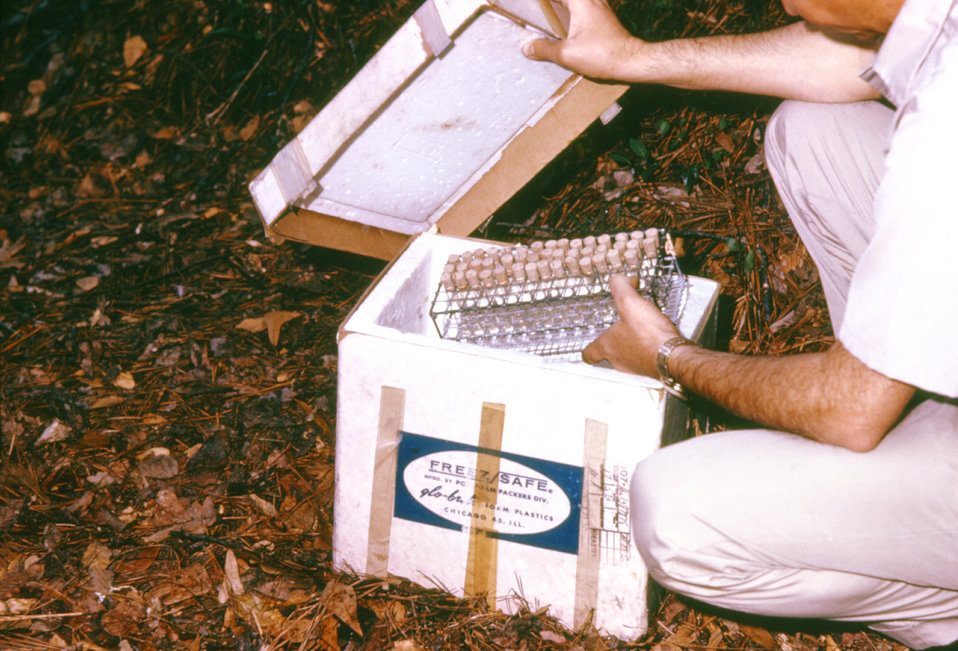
These blood specimens collected from vertebrates during an arbovirus field study are being stored on ice.